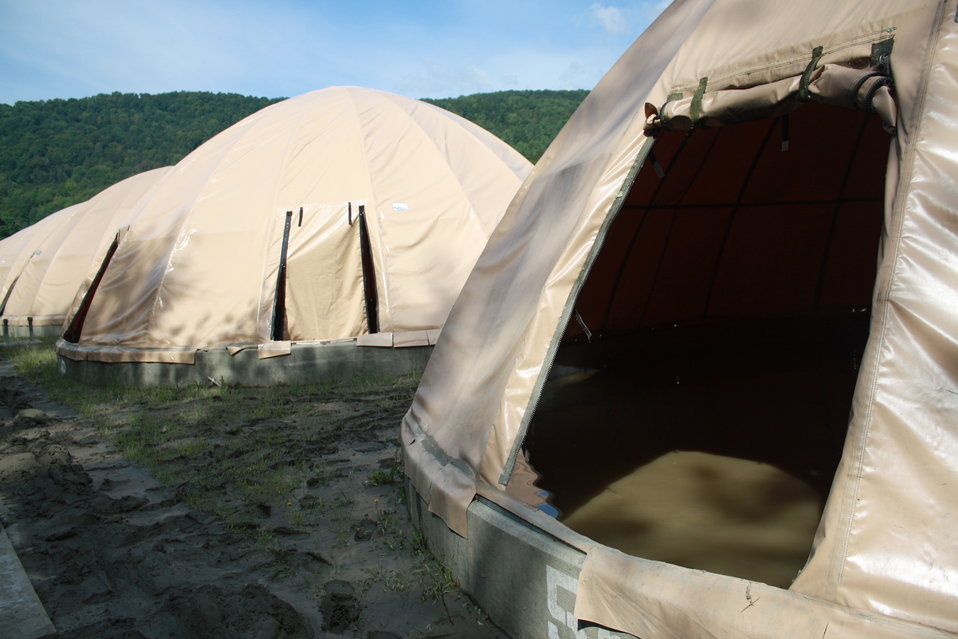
Sediment and river water breached circular pools during flood event

River sediment and flood water from the White River breached circular fish rearing pools during the Hurricane Irene flood event.